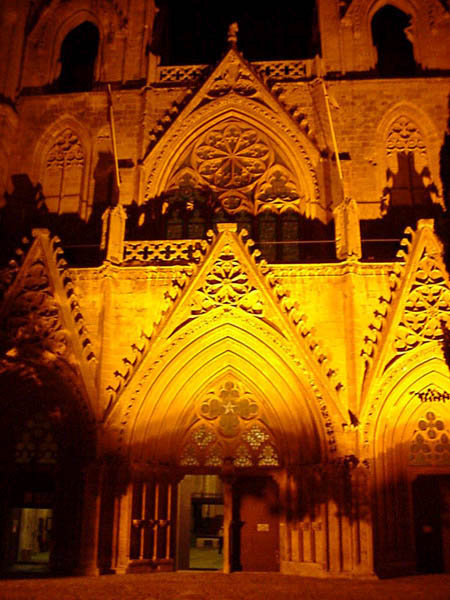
Lala Mustafa Pasha Mosque - St Nicholas Cathedral